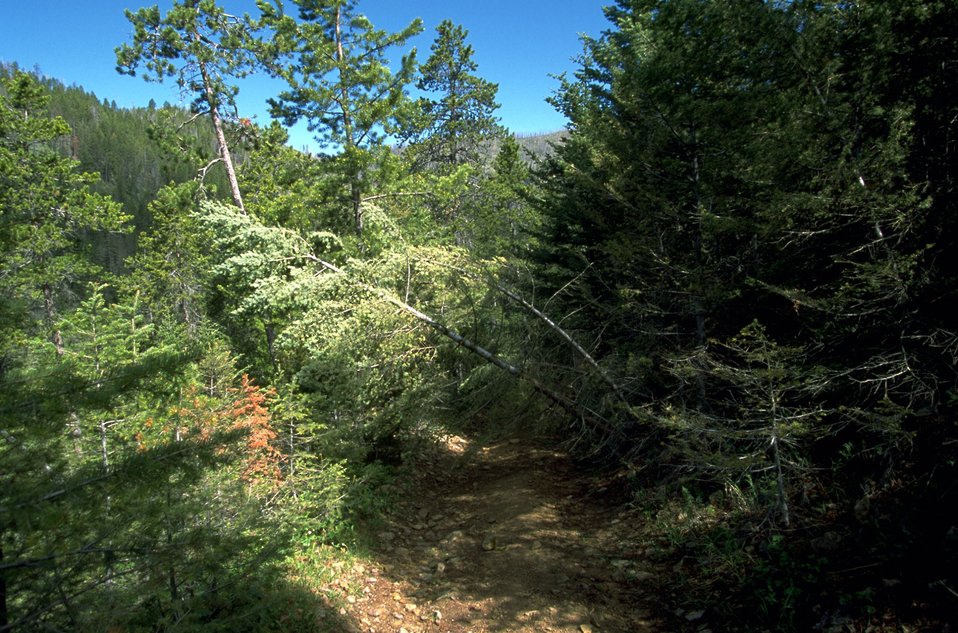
Tree that has been blown down over a trail in the Judith Mountains